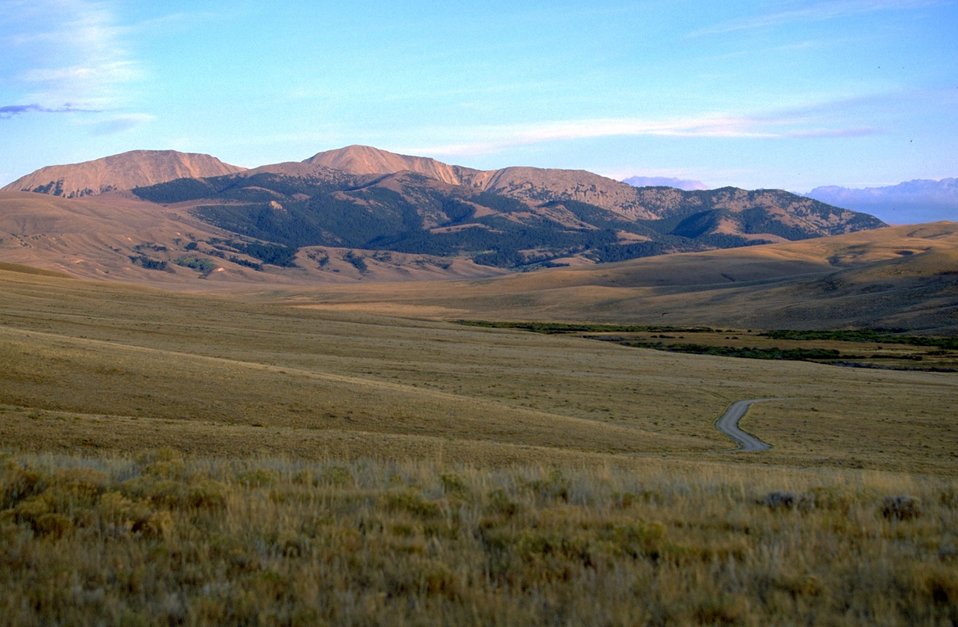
Grassy hills leading down to East Fork Blacktail Creek with mountains in the background